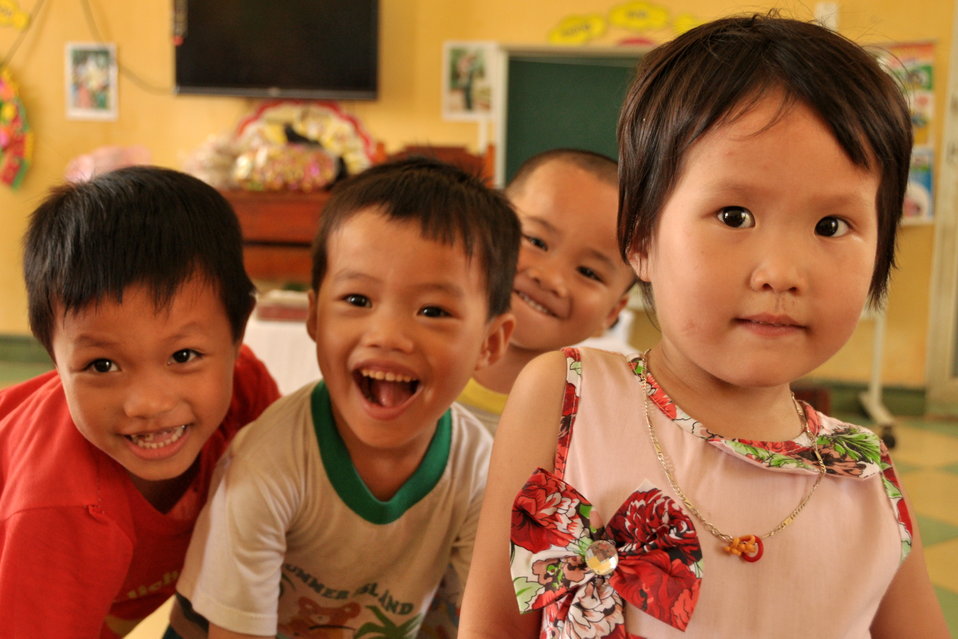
USAID Delivers Deworming Medication to Kindergartners in Nam Dinh Province

Children of Vietnam's Nam Dinh Province receive deworming medicine in a program supported by USAID and World Vision Australia.
June 1, 2013